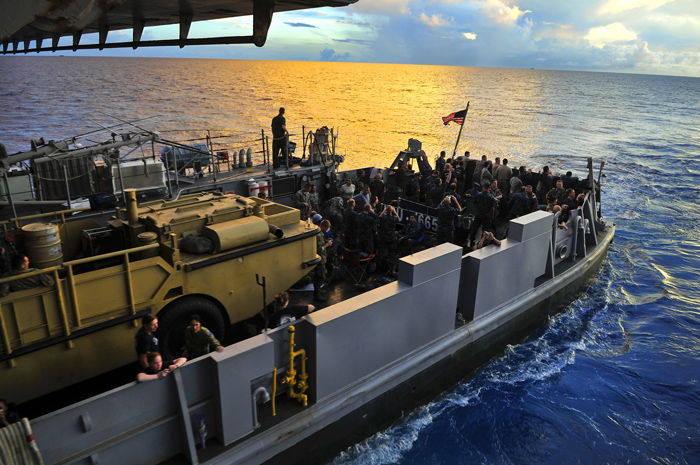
PP2011 Military and Civilian Personnel Exit the Well Deck

Military and civilian personnel participating in Pacific Partnership 2011 exit the well deck in Landing Craft Utility (1665) aboard amphibious transport dock ship USS Cleveland (LPD 7) at sunrise in Pohnpei, Federated States of Micronesia, on July 12, 2011. Pacific Partnership 2011 is a five-month humanitarian assistance initiative that that will make port visits to Tonga, Vanuatu, Papua New Guinea, Timor Leste, and the Federated States of Micronesia.